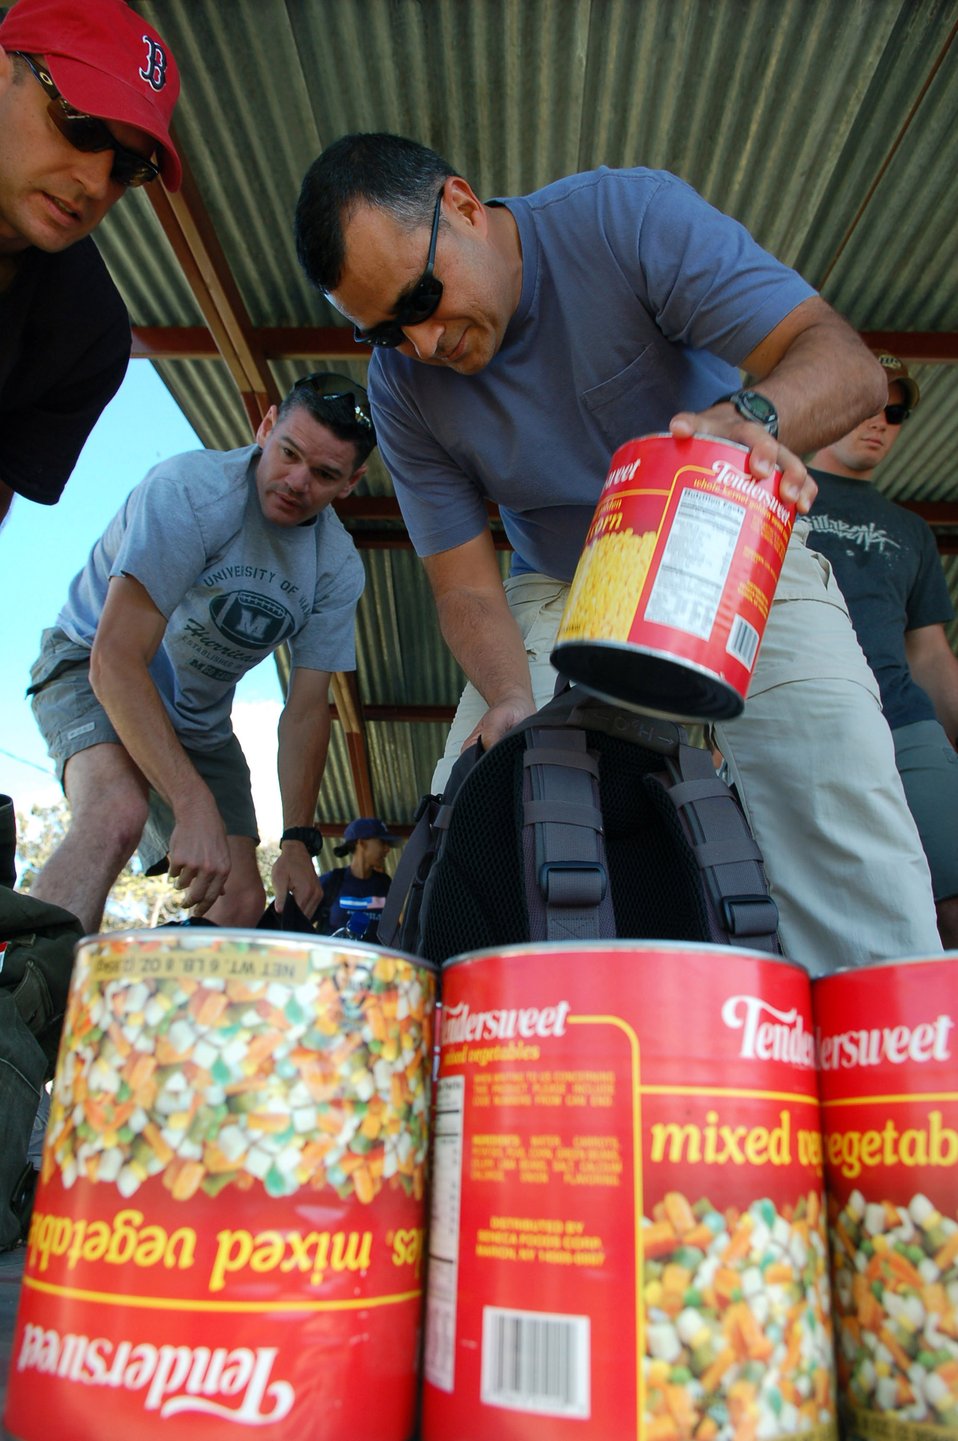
Volunteers deliver food to Honduran mountain village

Army Col. Marcus De Oliveira loads food into his backpack to take to the village of Capiro Dec. 14 at Soto Cano Air Base, Honduras. Colonel De Oliveria, the Joint Task Force-Bravo commander, was one of about 60 people who attended the three-mile JTF-Bravo Chapel-sponsored hike, which was the fourth in a series of five scheduled trips.